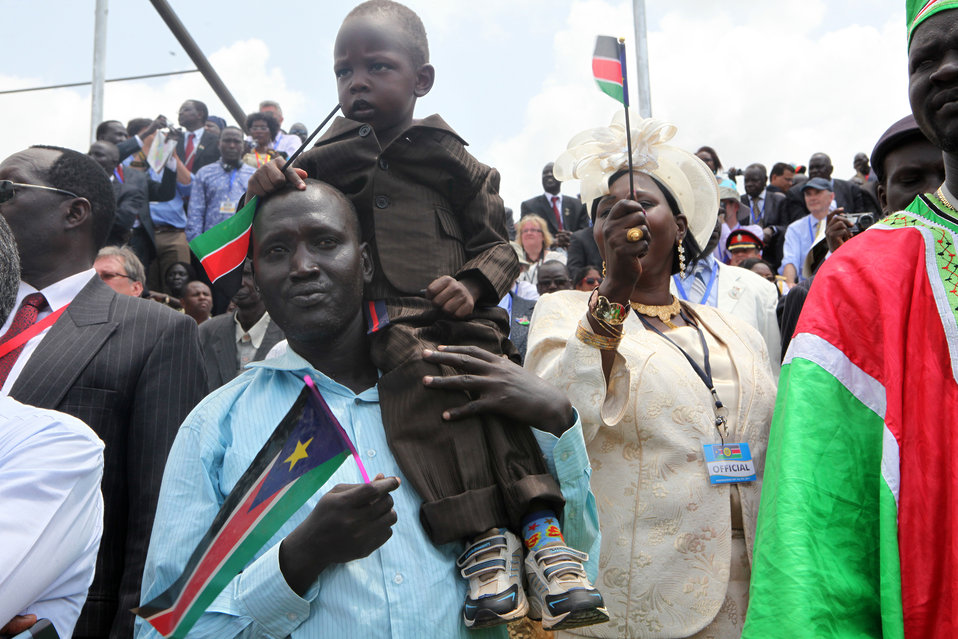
South Sudan Independence Day

Guests at the Republic of South Sudan Independence Day celebrations in Juba, South Sudan on July 9, 2011.